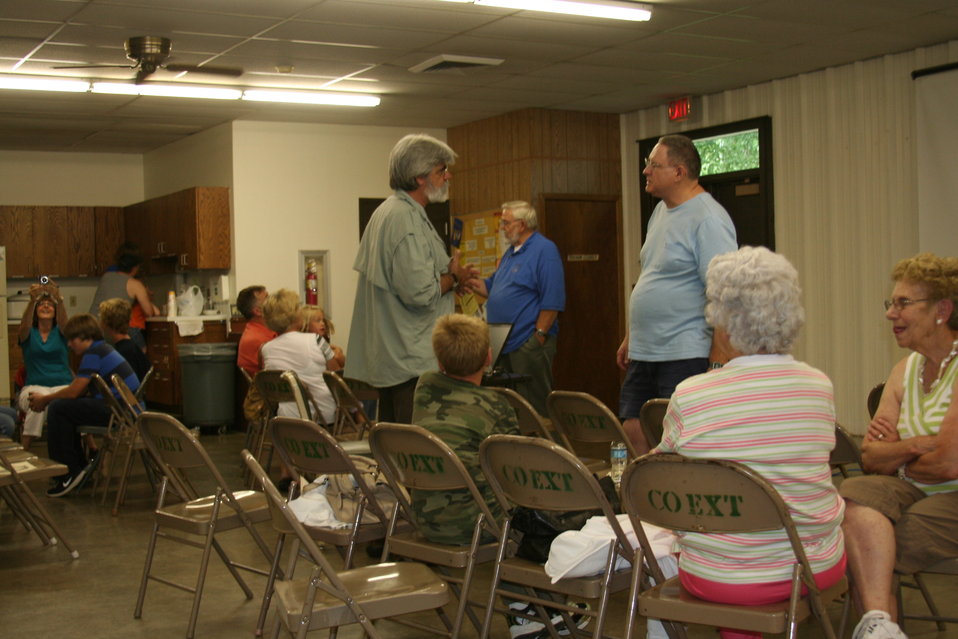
Creatures of the Night 2011